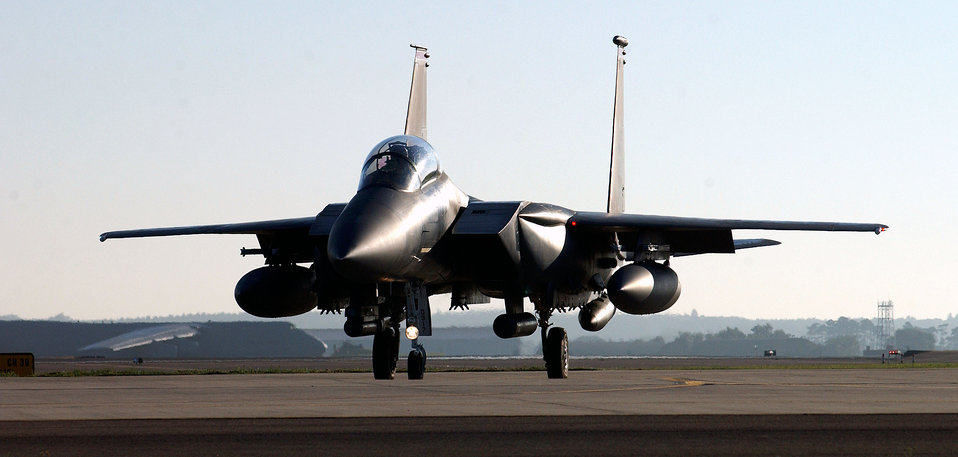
Waiting for my turn

ROYAL AIR FORCE LAKENHEATH, England -- An F-15E Strike Eagle waits at the end of the runway here before taking off for a deployment supporting Operation Iraqi Freedom.